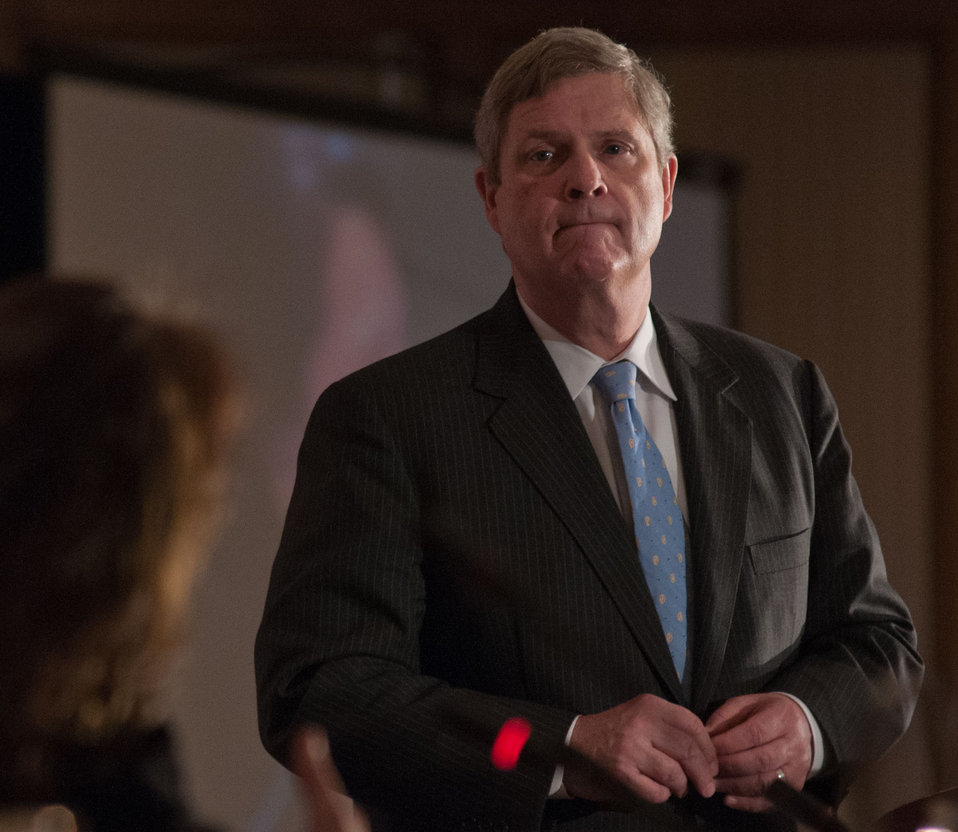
Agriculture Secretary Tom Vilsack listens to Affiliated Tribes of the Northwest Indians’ Fawn Sharp (far left) comment and invite the Secretary to a future event, at the National Congress of American Indians Tribal Nations Legislative Summit at L’Enfant Plaza Hotel in Washington, D.C., on Wednesday March 7, 2012. Secretary Vilsack has made improving relations with Native American Tribes a priority by creating the Office of Tribal Relations and directed all U.S. Department of Agriculture (USDA) agencies to be more aware of tribal issues and engage in tribal consultation and collaboration. Secretary Vilsack reiterated USDA’s support to Native American communities with financial support for electric, broadband and wastewater infrastructure, and providing families and businesses with home loans and business grants. Secretary Vilsack emphasized USDA’s participation in the First Lady’s Lets Move in Indian Country initiative to combat childhood obesity in tribal communities.